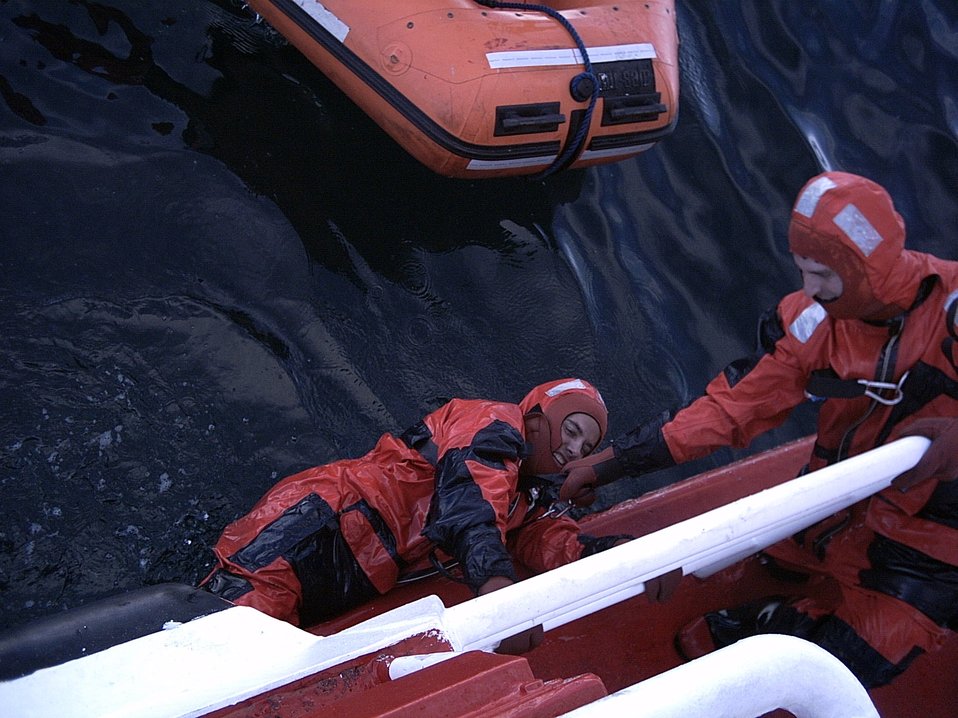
Open water

THULE AIR BASE, Greenland -- Lt. Col. Joseph Dennis pulls Capt. Brint Woodruff out of the Arctic Ocean and onto the deck of the Sisak IV during a demonstration of Danish Police water survival suits. Airmen dove from the Sisak IV's roof, swam in 30-degree water and explored icebergs during the